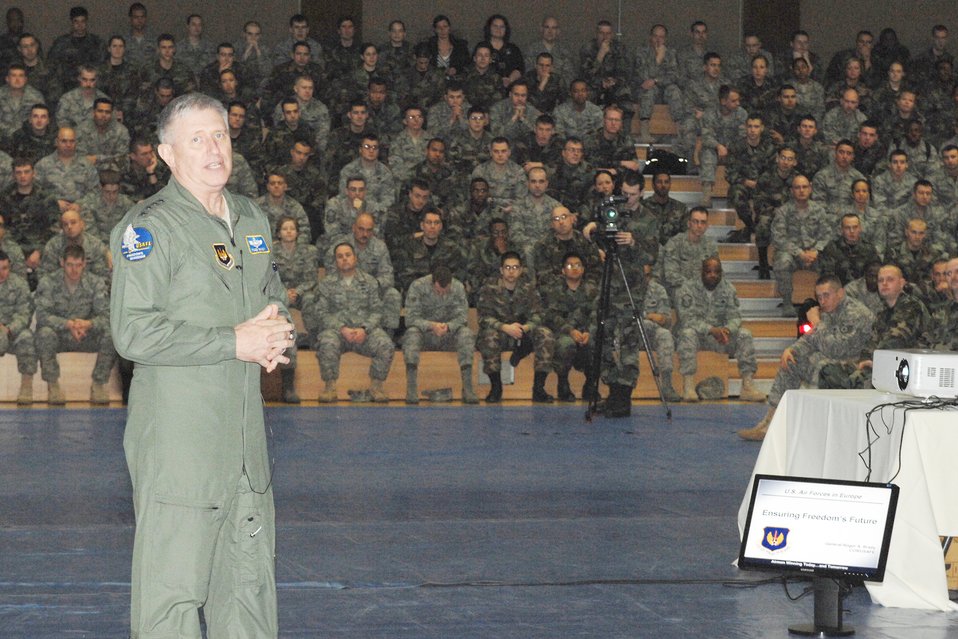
Gen. Roger A. Brady briefs Airmen from the 52nd Fighter Wing at Spangdahlem Air Base, Germany, March 31, 2008. General Brady, the commander of U.S. Air Forces in Europe, will retire early next year.